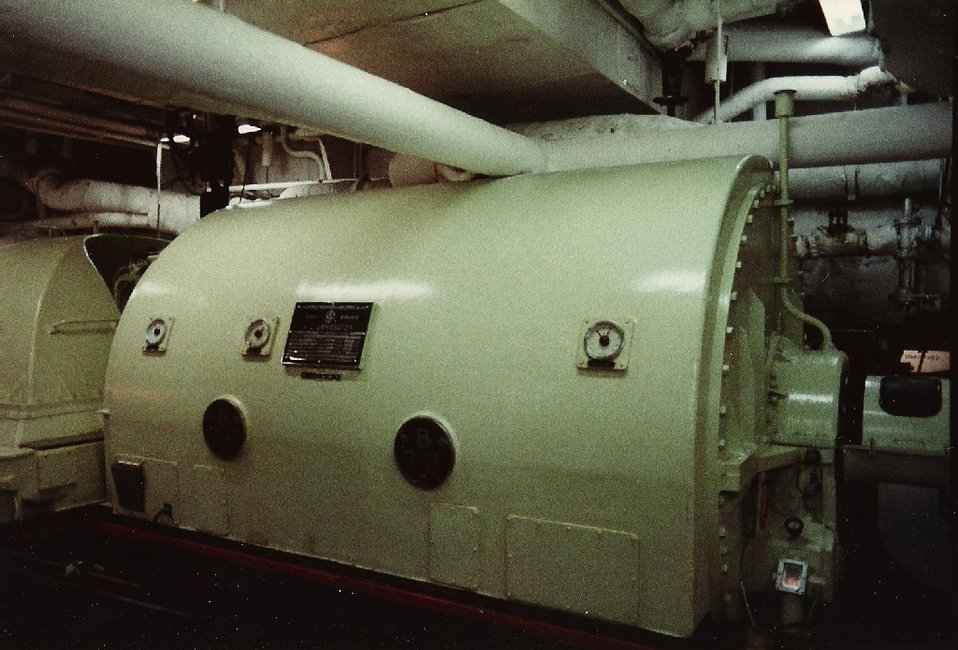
Port Propulsion Alternator, SS Canberra Photo taken by Paul Dashwood 1984